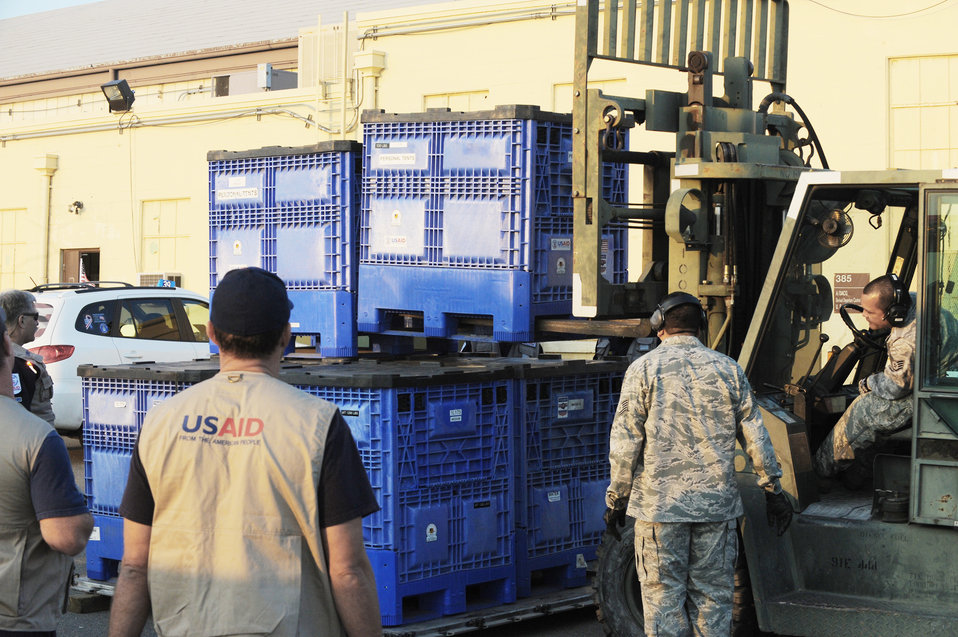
Airmen load C-17s for Haitian relief

Relief workers and search and rescue teams use March Air Reserve Base, Calif., as a staging area to assemble supplies, people and equipment Jan. 13, 2010, following the recent 7.0-magnitude earthquake in Haiti. All will be loaded on a C-17 Globemaster III and flown into Port-au-Prince, Haiti. The aircraft is assigned to the 60th Air Wing at Travis Air Force Base, Calif.,